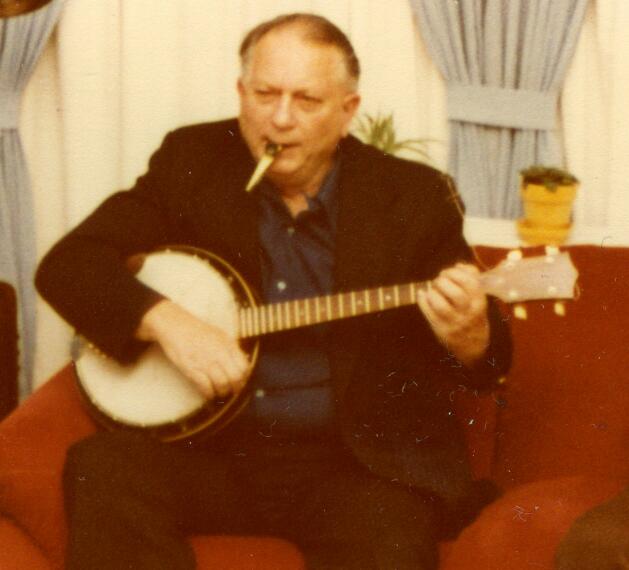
Jack Vance Banjo Kazoo